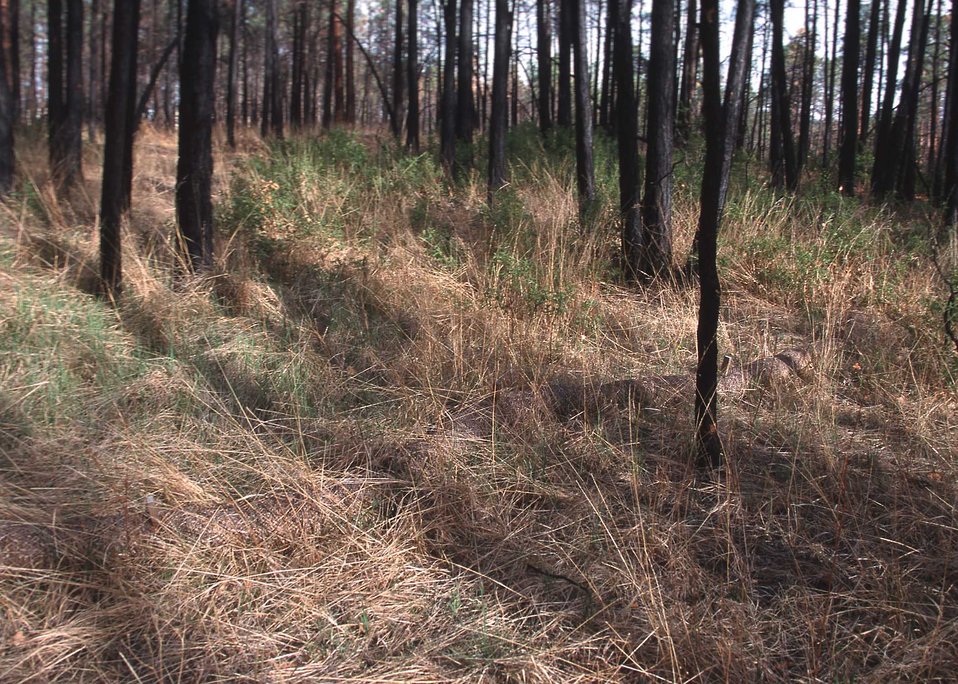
First years growth of emergency reseeding after the Los Alamos fires. Some of the species planted for erosion control and habitat improvement were prairie junegrass, slender wheatgrass, mountain brome, three awn, gambel's oak, and mountain mahogany.